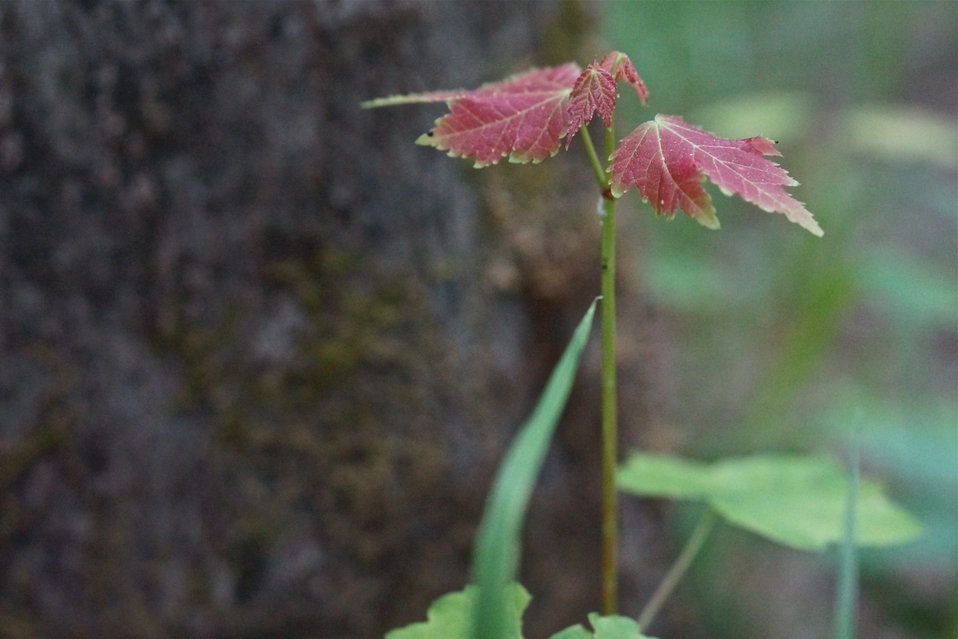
Young maple tree

In May, bog conservationists from Tennessee, North Carolina, and Georgia convened in the north Georgia mountains for the spring, 2014 meeting of the Bog Learning Network. The event provided an opportunity for biologists to see, first hand, the result of management efforts at two north Georgia bogs. More importantly, the outings provided an opportunity to share innovative approaches to bog management, such as the role of the Georgia Plant Conservation Alliance in conserving rare plants and coordinating a cadre of volunteers to work on bog management.

The Bog Learning Network was convened in the winter of 2013 as a way to bring together people working for bog conservation across the Southern Appalachians. Southern Appalachian bogs are one of North America’s rarest habitats and home to many rare plants and animals.